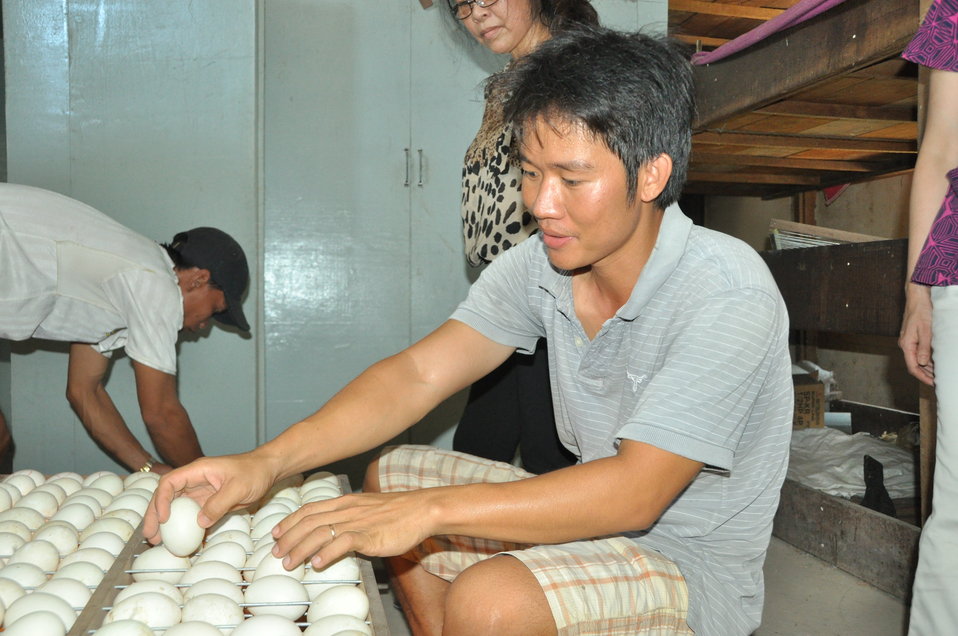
Mr. Thien inspects egg at his duck hatchery in Can Tho

USAID Vietnam